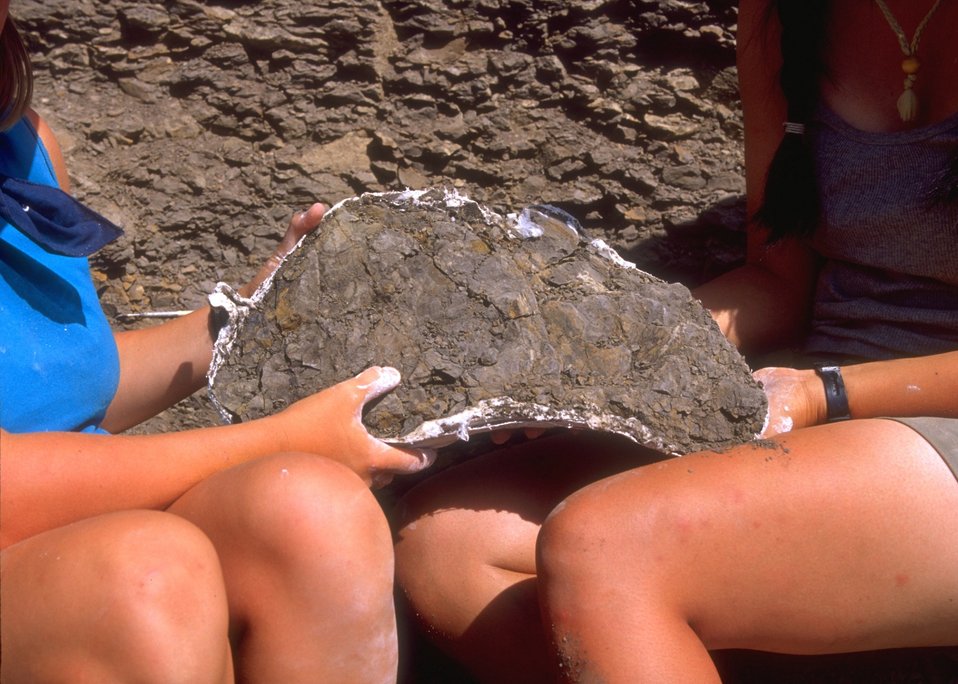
Completed cast of dinosaur bone, Lance Creek Fossil Area, Newcastle Field Office.